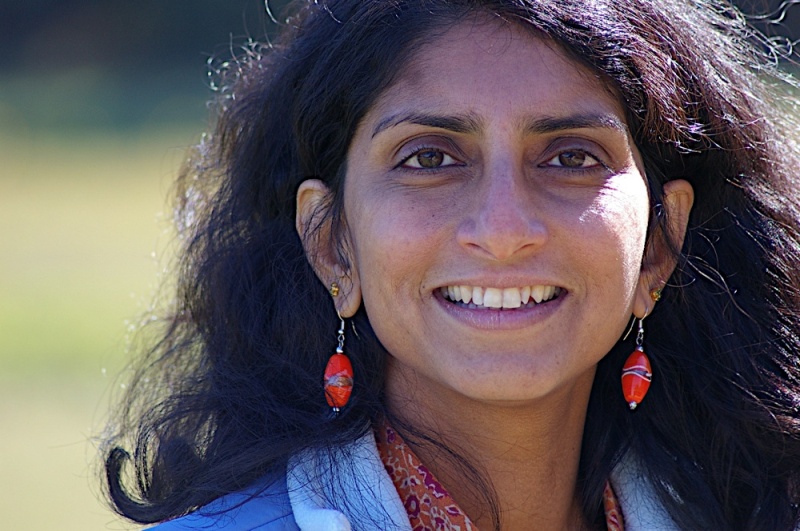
Kavita Ravi is an American Association for the Advancement of Science (AAAS) Fellow at the Office of Policy and International Affairs (PI). She chairs the Award- and Procurement- related activities in the Super-efficient Equipment and Appliance and Equipment Deployment (SEAD) initiative of the Clean Energy Ministerial. She is also responsible for strengthening the private sector engagement in SEAD activities. Prior to the AAAS fellowship, Kavita completed the “Leading Clean Energy Ventures” executive program with the New England Clean Energy Council and Boston University and worked with early-stage clean energy ventures in the Boston area. Kavita has 12 years of private sector experience in the Electronic Design Automation industry, leading algorithmic innovations and advanced development of software products with multi-million dollar revenues. She received a Doctorate in Computer Engineering from the University of Colorado.

Read her full story at energy.gov/diversity/articles/women-energy-kavita-ravi